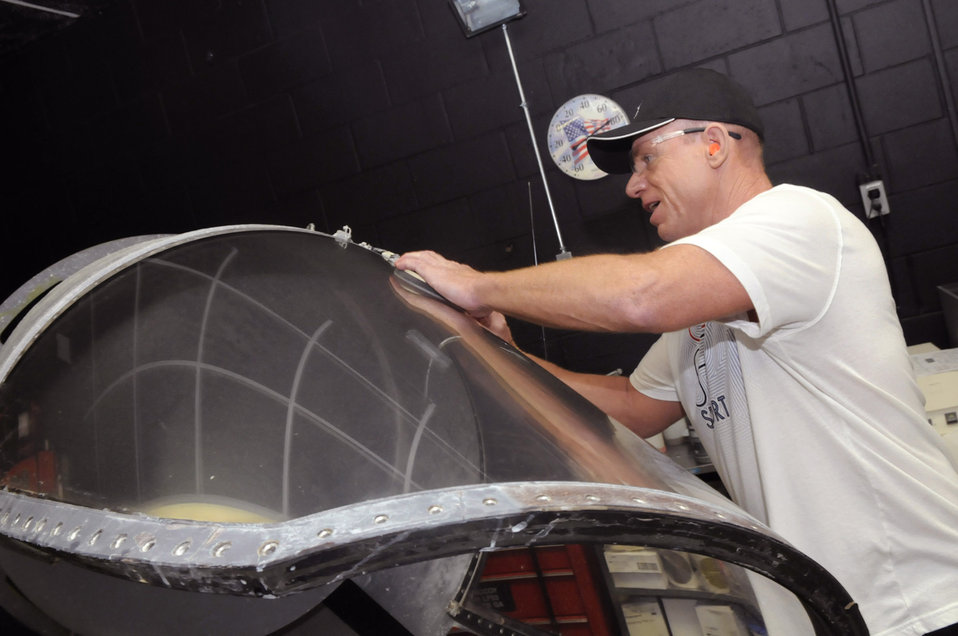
Robins maintainers give pilots unobstructed vision

Chris Jones reconditions a wind screen for an F-15 Eagle in the 561st Aircraft Maintenance Squadron canopy shop at Robins Air Force Base, Ga.